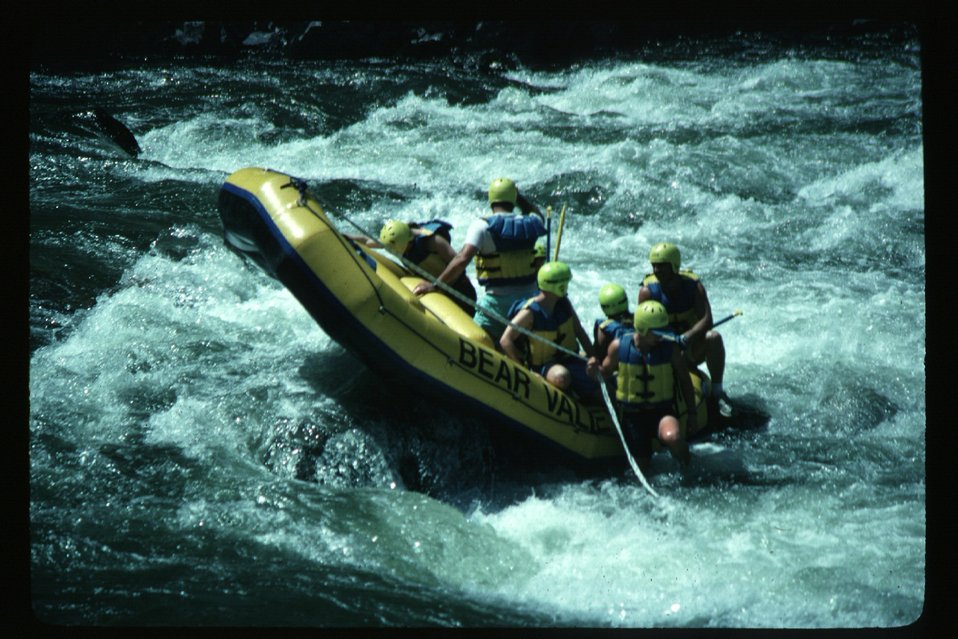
Kayaker in white water Kayaking Four Rivers Field Office LSRD Lower Snake River District